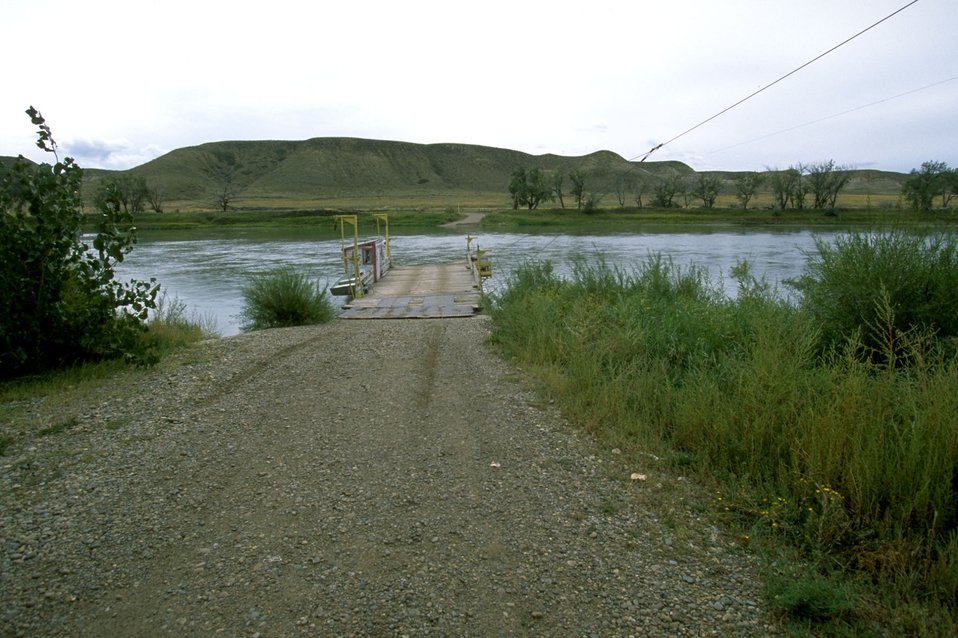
Virgelle Ferry on Upper Missouri River near Loma